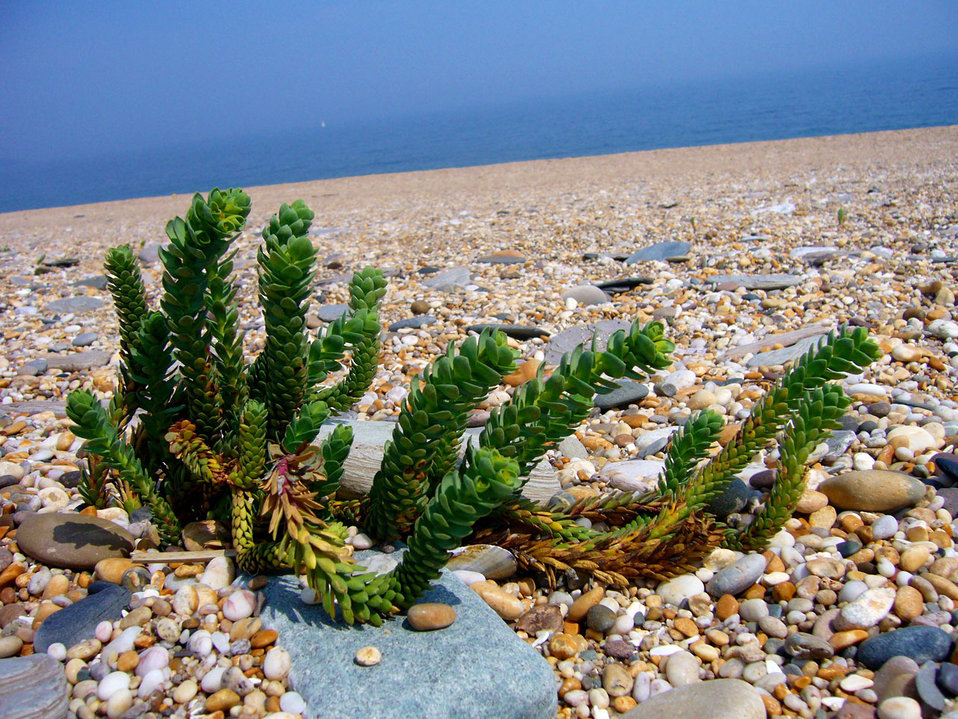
Seaside in devon.